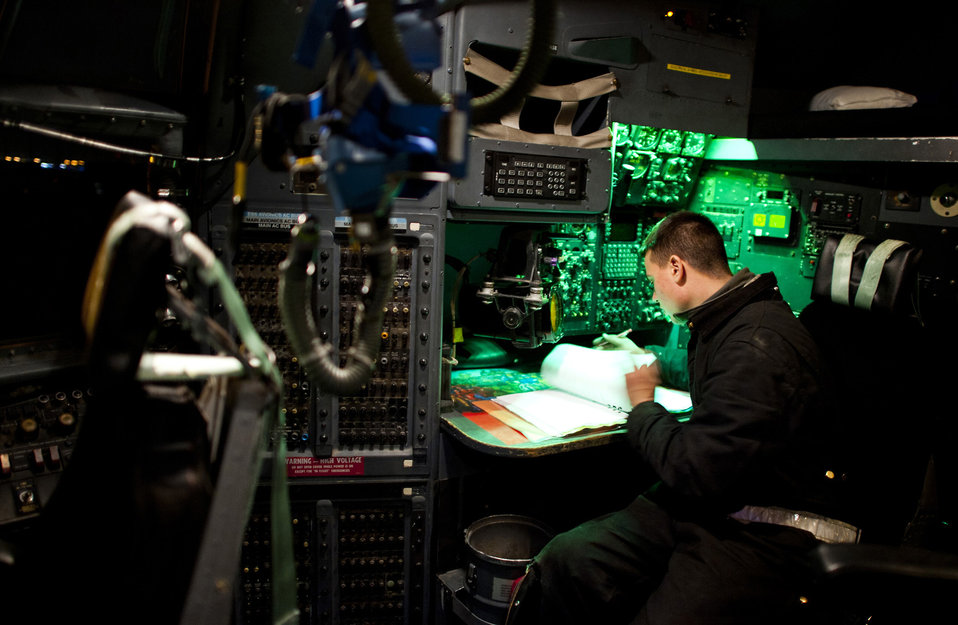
By the book

Airman 1st Class Stephen Tessier reviews log books as a C-130 Hercules powers up March 14, 2011, at Yokota Air Base, Japan. Airman Tessier is a crew chief with the 374th Aircraft Maintenance Squadron at Yokota AB.